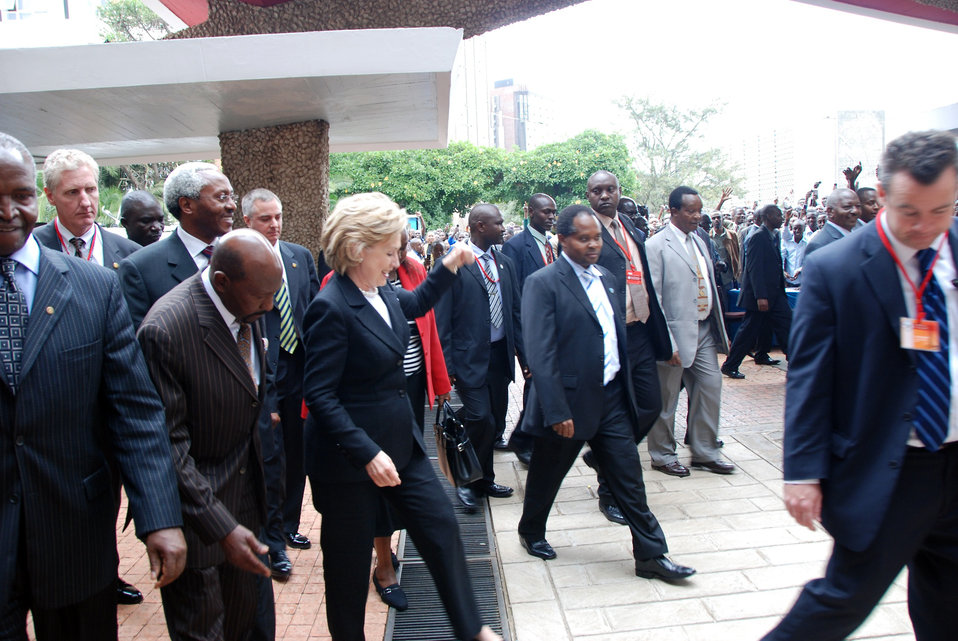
Secretary Clinton Visits Nairobi University

U.S. Secretary of State Hillary Rodham Clinton leaves after to a town hall meeting at the University of Nairobi in Nairobi, Kenya August 6, 2009.